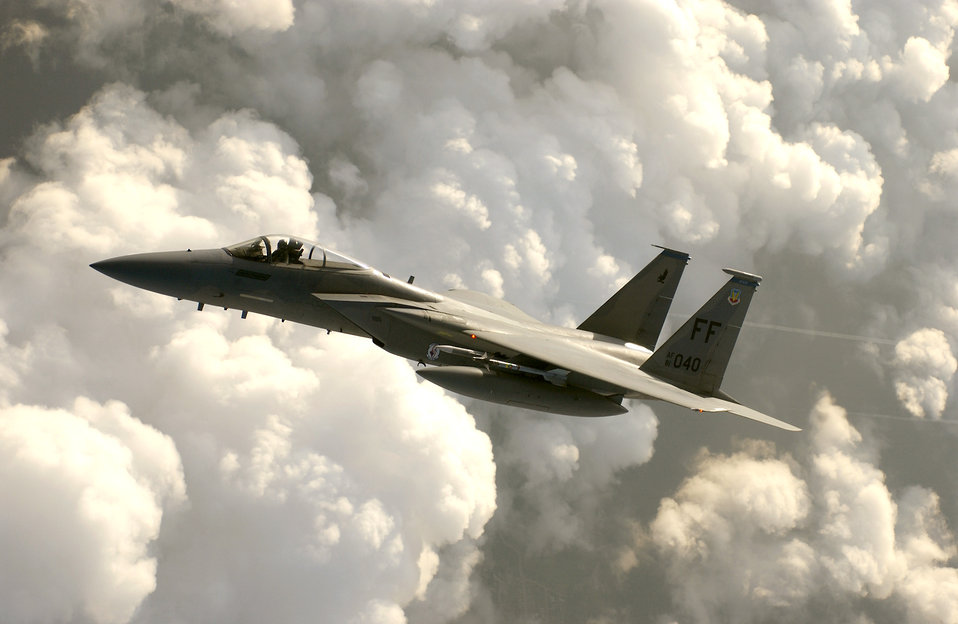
Sky patrol

LANGLEY AIR FORCE BASE, Va. -- Maj. John Braun patrols the sky during a combat air patrol mission from here July 1. Pilots patrolled the sky over the Washington, D.C., area providing presidential support during the Fourth of July weekend. Major Braun is an F-15 Eagle pilot with the 94th Fighter Squadron.